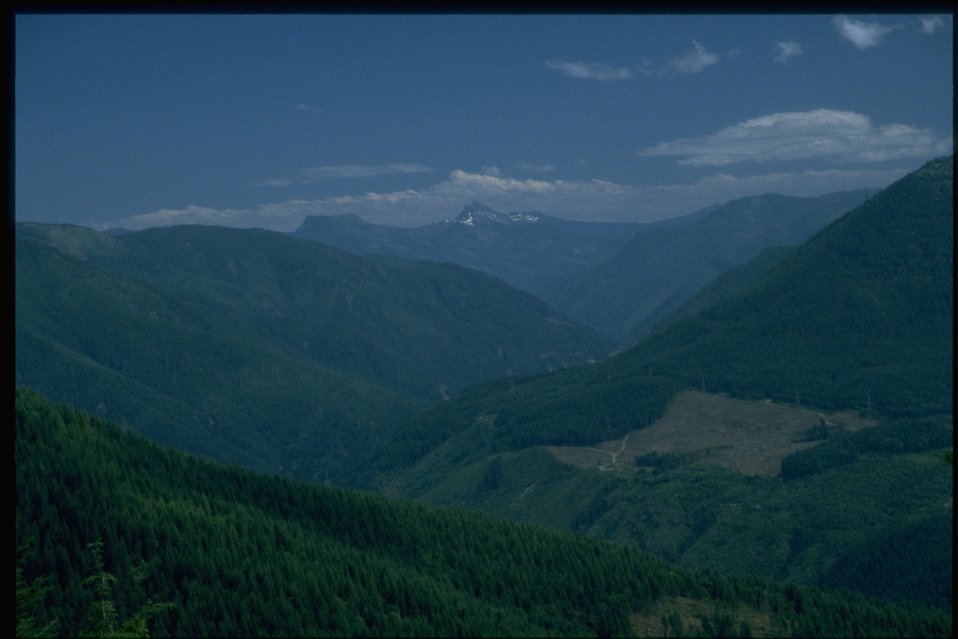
Scenic view from Mt. Horeb.